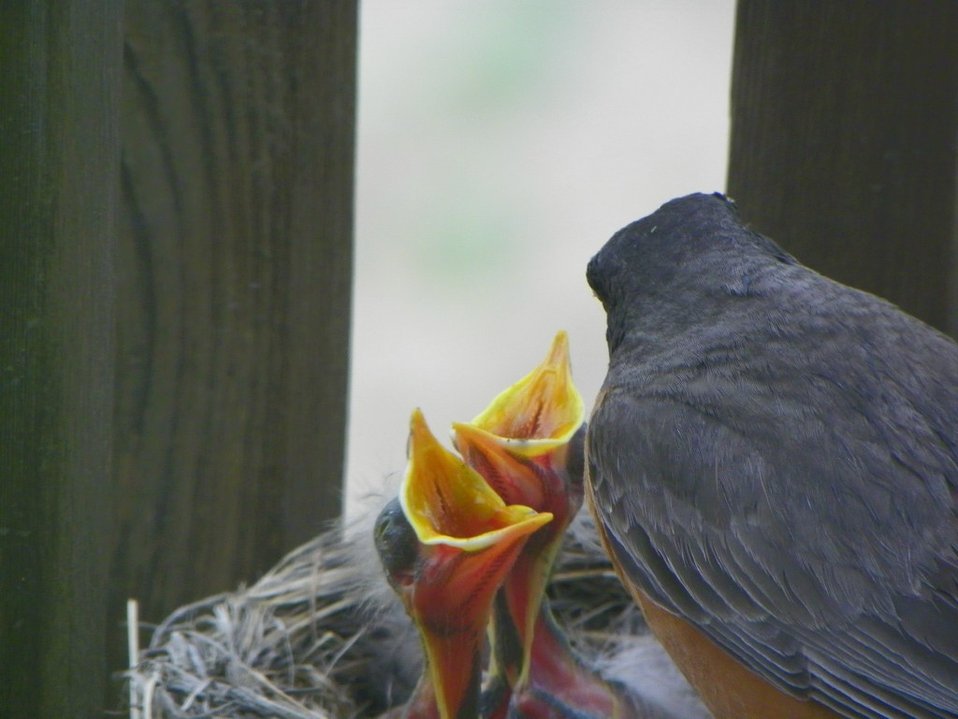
Hungry Robins

Five-day-old robins ready to be fed.

Location: Pierre, SD

Credit: Shelley Erickson / USFWS

Photo Contest Entry #183